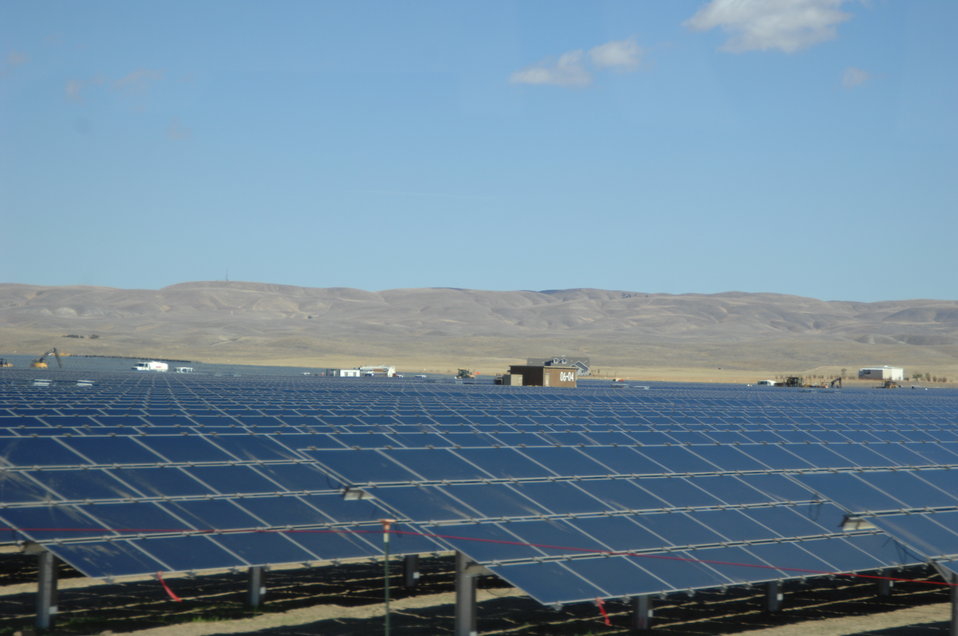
Solar Panels at Topaz Solar 7